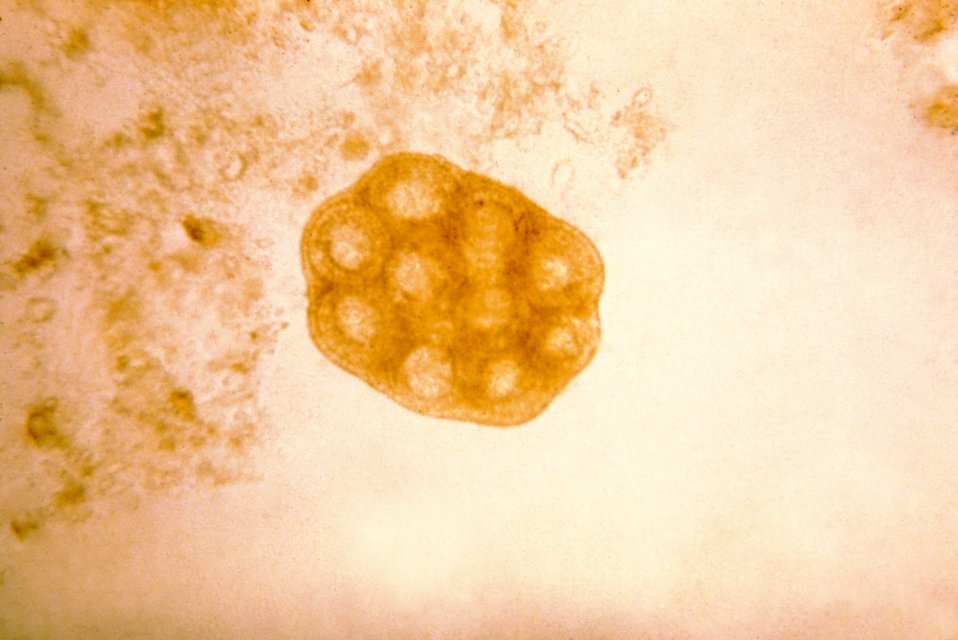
This micrograph depicts an egg packet from the cestode Dipylidium caninum.